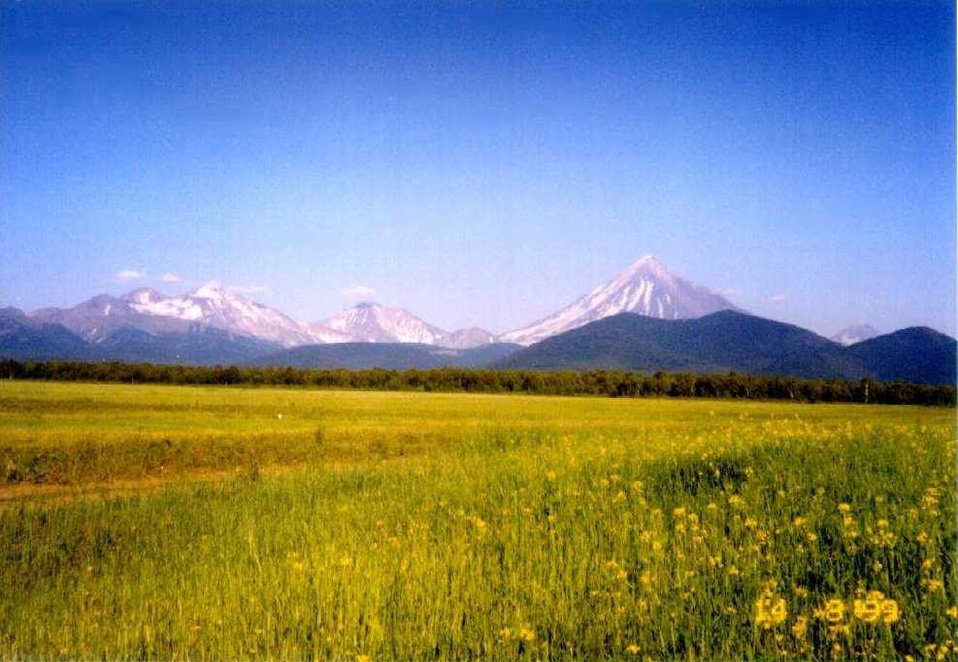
Kamchatka Oleg Zaporozhets

Kamchatka Nature Reserve in Russia.